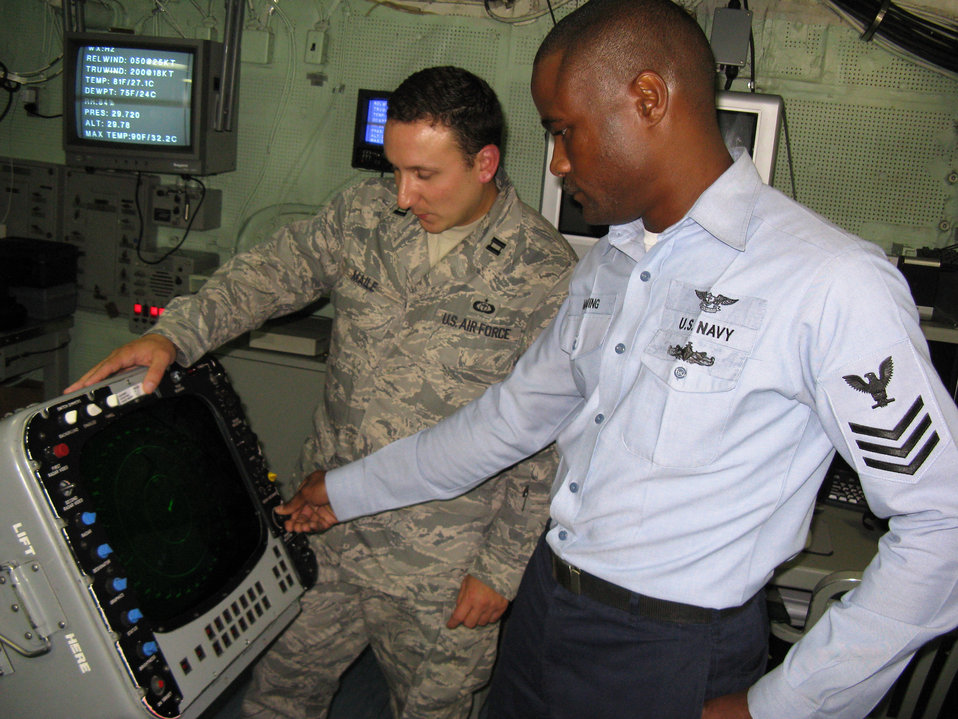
Forecasters afloat support multinational training exercise

Navy Petty Officer 1st Class Timothy Manning demonstrates the SPA-25 surface radar repeater to Capt. Steve Maile, Combined Joint Task Force 950 meteorological and oceanographic officer July 27. A joint Navy and Air Force weather team worked together at sea aboard the USS Bataan in support of JTFEX 08-4, a multinational exercise that included Sailors, Soldiers, Airmen, Marines and Coast Guardsmen.